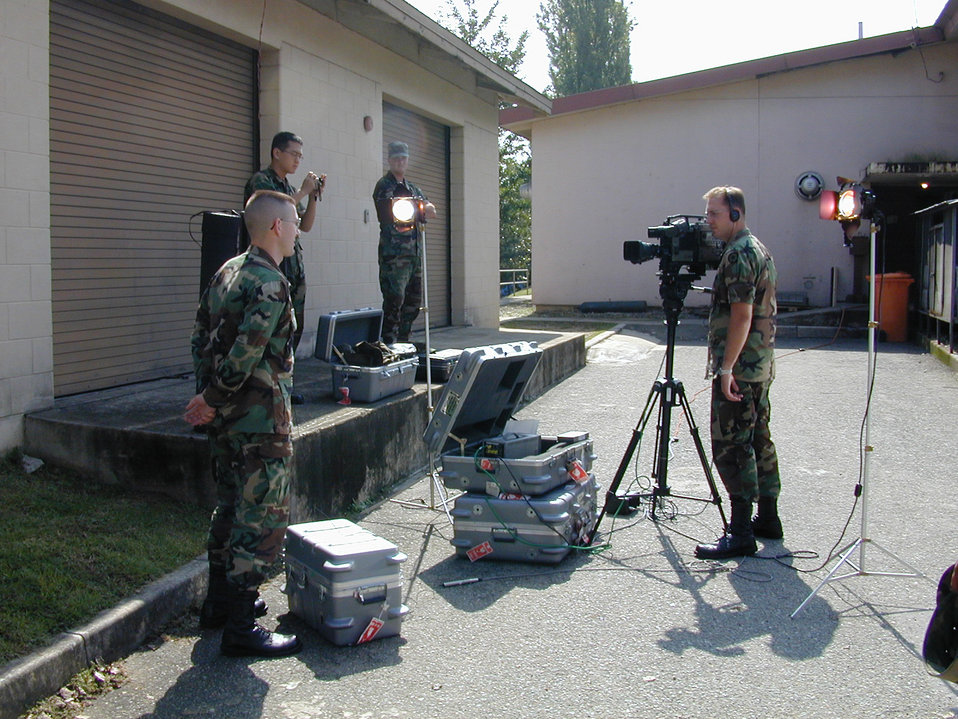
Holiday greeting

FILE PHOTO -- Army Sgt. Chris Seaton videotapes a holiday greeting for release to hometown television and cable outlets across the United States. Seaton's Army/Air Force Hometown News Team recorded more than 3,400 holiday greetings during visits to Army and Air Force installations throughout the Pacific.